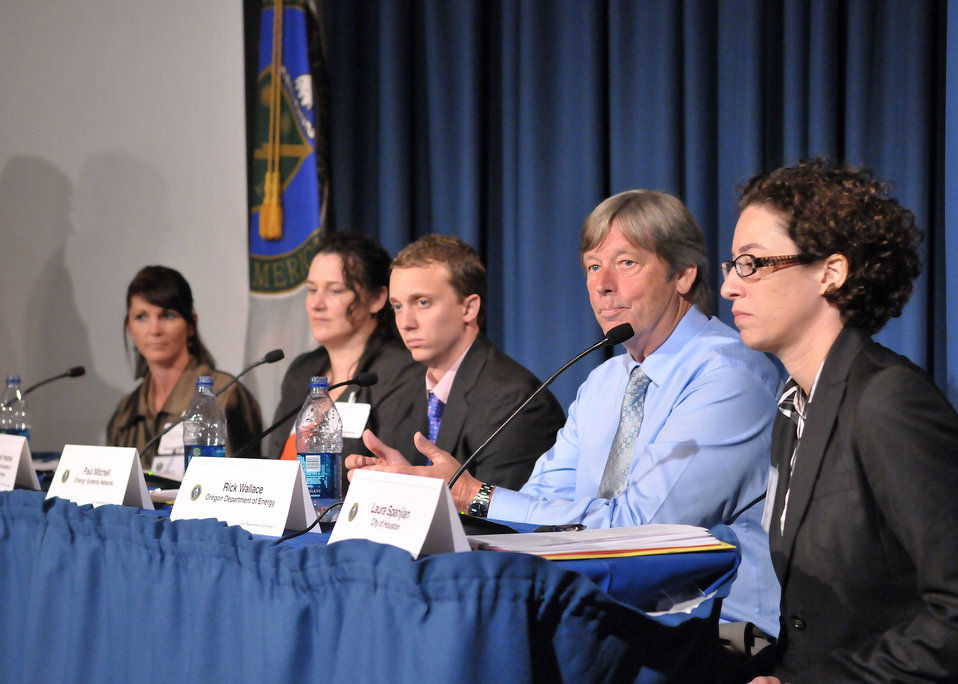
Panel at the EV Cities Workshop